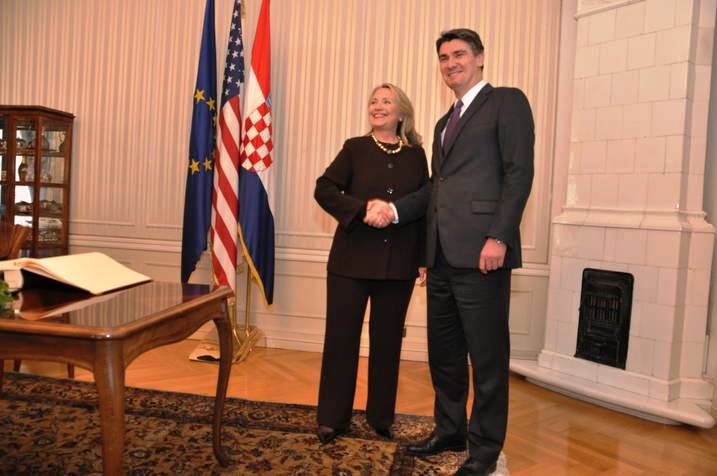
Secretary Clinton Shakes Hands With Milanovic

U.S. Secretary of State Hillary Rodham Clinton shakes hands with Croatian Prime Minister Zoran Milanovic before their meeting in Zagreb, Croatia, October 31, 2012.